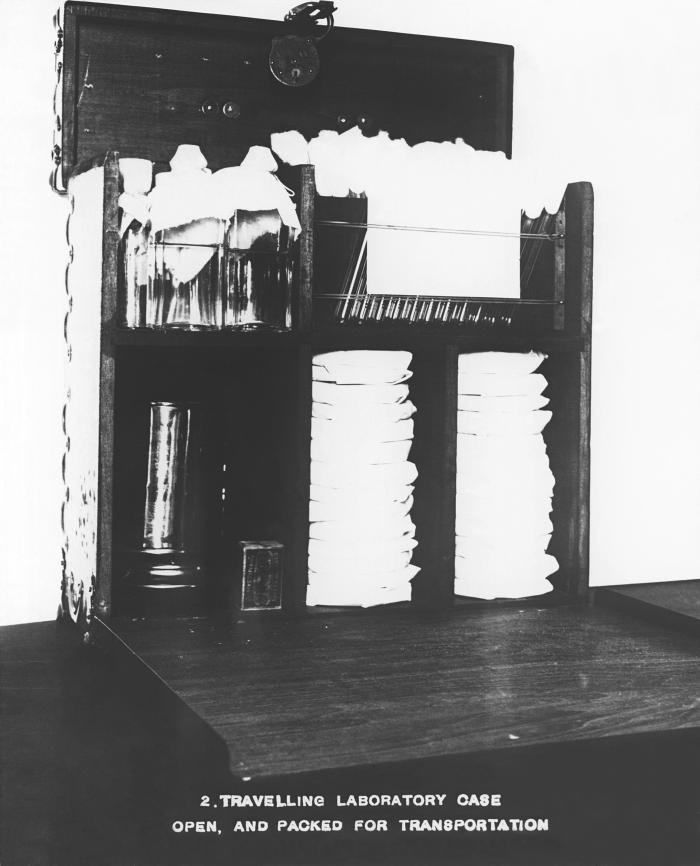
This 1916 photograph depicted a traveling laboratory case that has been opened, revealing its contents in place inside the case, ready for transport. A view of the packed, closed case can be seen in PHIL #8503, and an image of the case open, and emptied to display its contents, ready for work, can be seen in PHIL #8505.